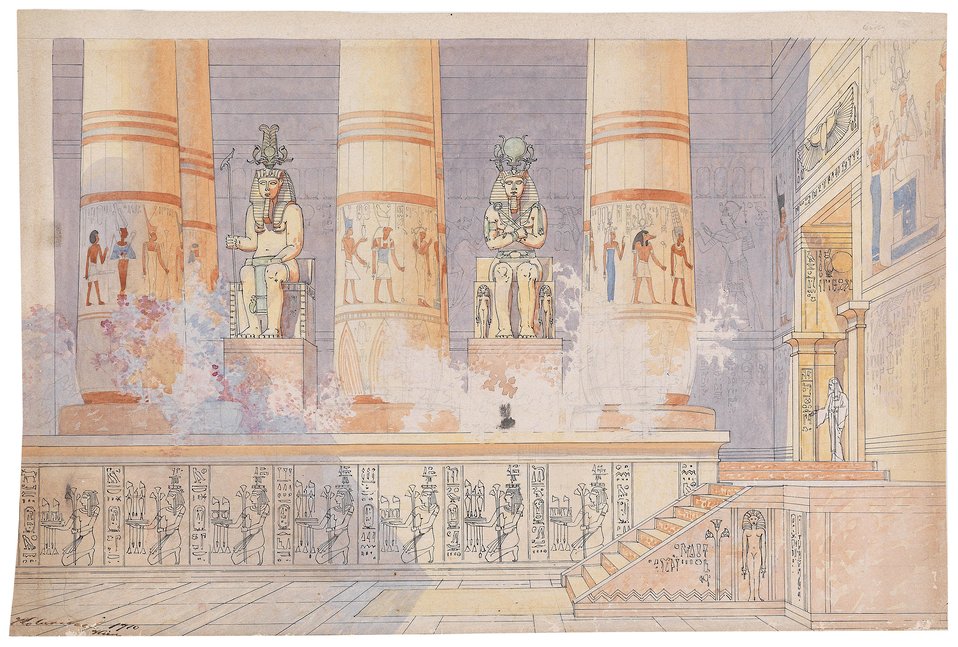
Bühnenbildentwurf für die Oper Aida, bezeichnet und datiert 'Kolaritsch, Wien 1910', Aquarell über Bleistift und schwarzer Tuschfeder auf Papier, 31 x 46,5 cm